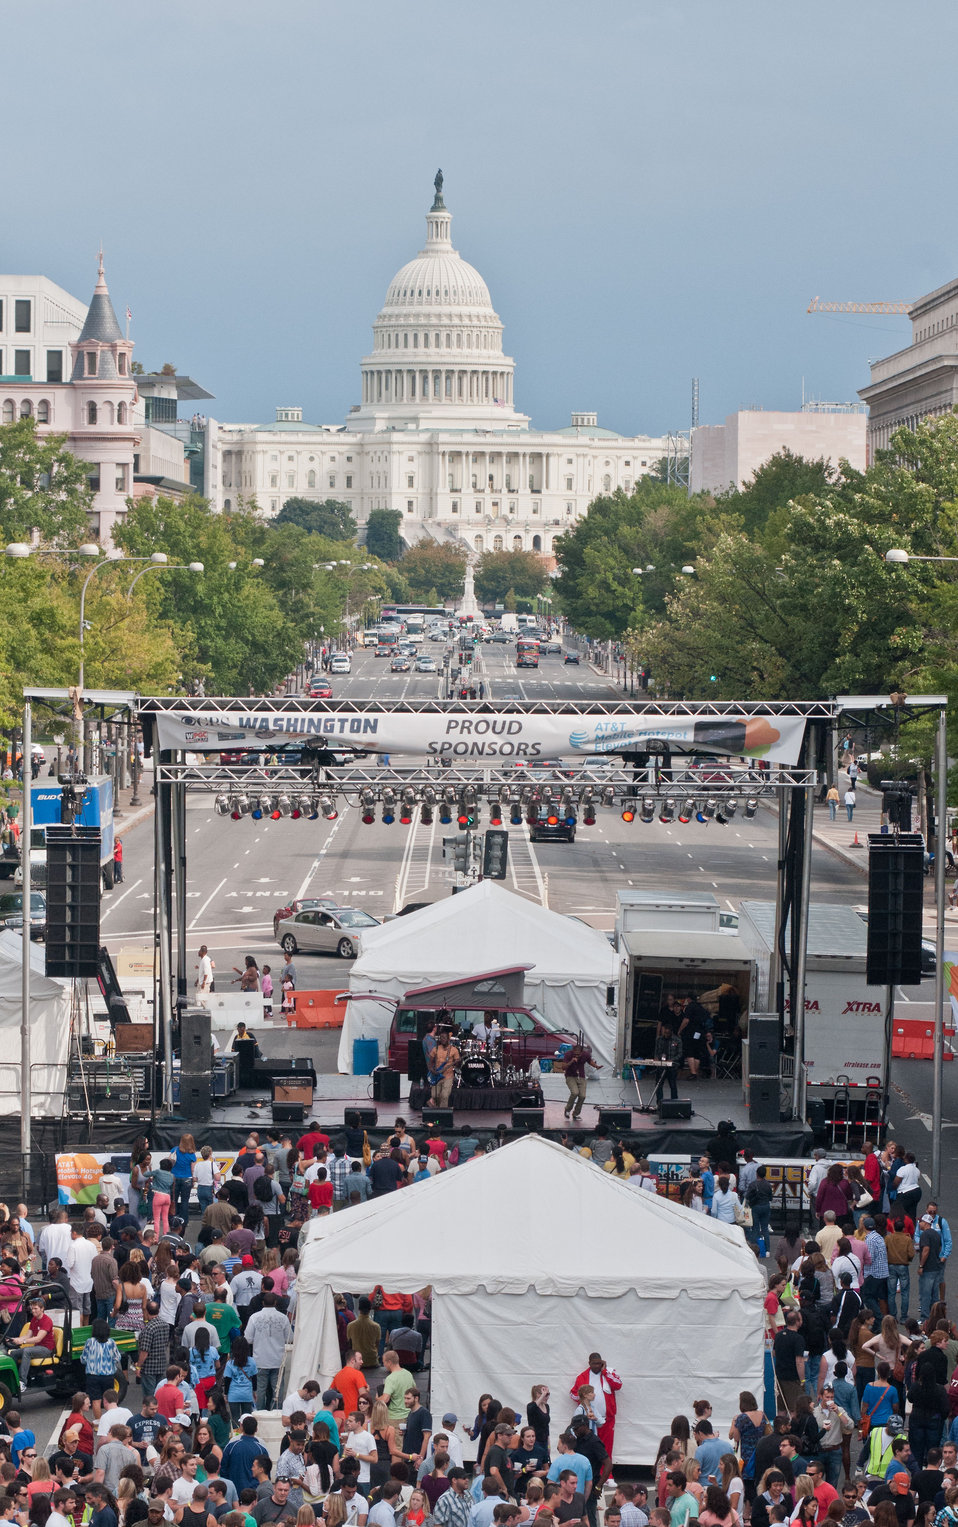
The Taste of D.C., event highlights more than 70 eateries, 30 specialty beer providers, the United Service Organization (USO) Metropolitan Washington, and live bands. It is anticipated that more than 500,000 people will attend over the course of the three-day event, which extends from the White House to the Capitol, along Pennsylvania Ave. in Washington D.C. on Saturday, October 6, 2012. Agriculture Food Safety and Inspection Service specialists present talks and cooking demonstrations. Agriculture’s mobile Discovery Zone is on hand to educate children and parents about the four main principals of food safety – clean, separate, cook and chill.